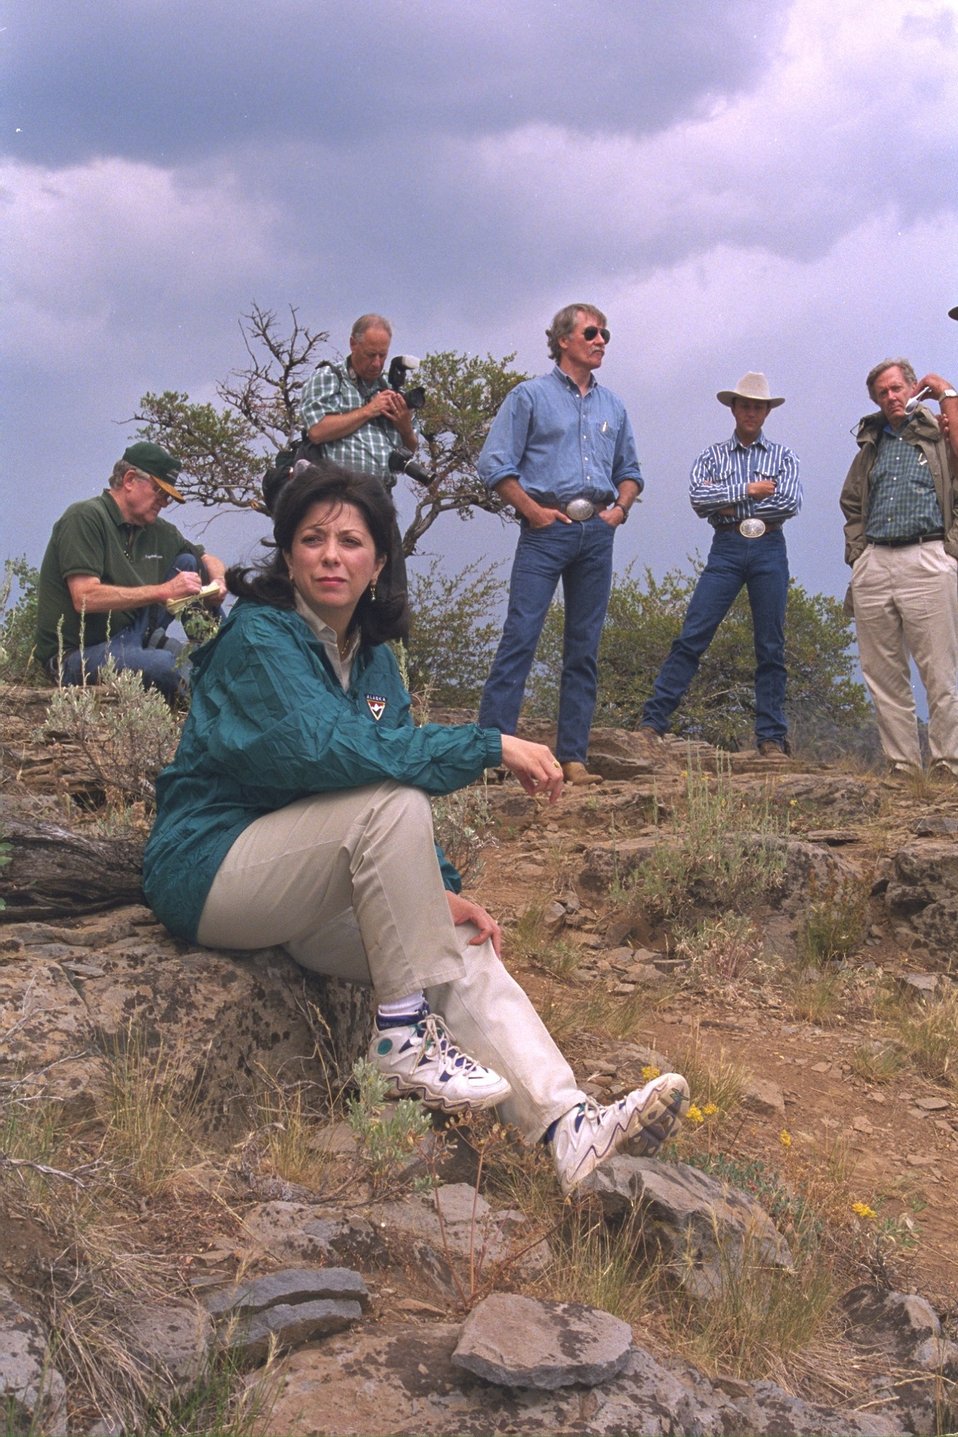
Sylvia Baca sitting in the foreground with Tom Moore, Governor Kitzhaber, rancher Stacie Davies, and Secretary Babbitt in the background on Steens Mountain near Big Indian Gorge.